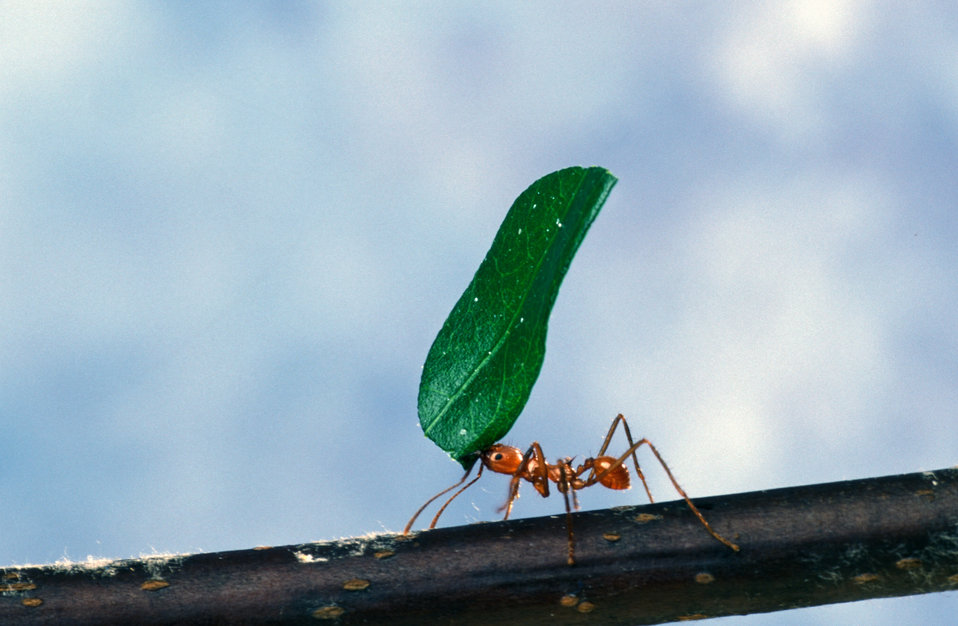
This leaf-cutting working ant (Atta cephalotes) carries a leaf back to its nest on Aug. 16, 2005. These ants are primary herbivores of tropical areas such as Central America and they can be serious agricultural pests.